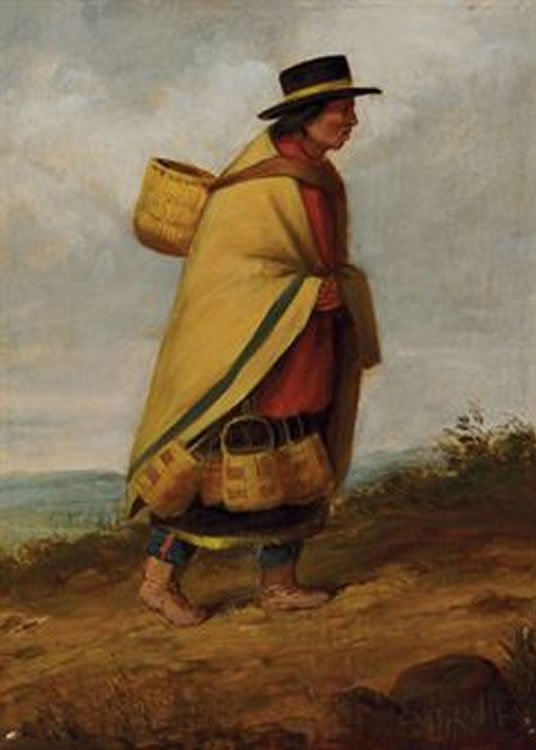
Indian Basket Seller, oil paintings by Cornelius Krieghoff, 10.25 x 7.50 in.